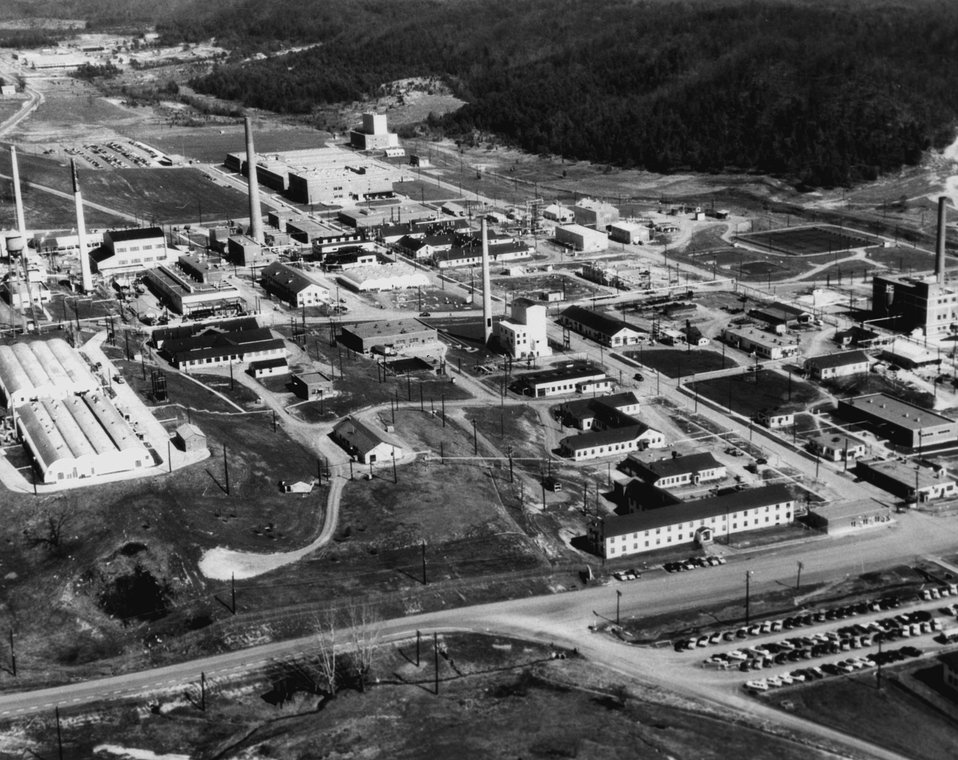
Oak Ridge National Laboratory. c. 1956